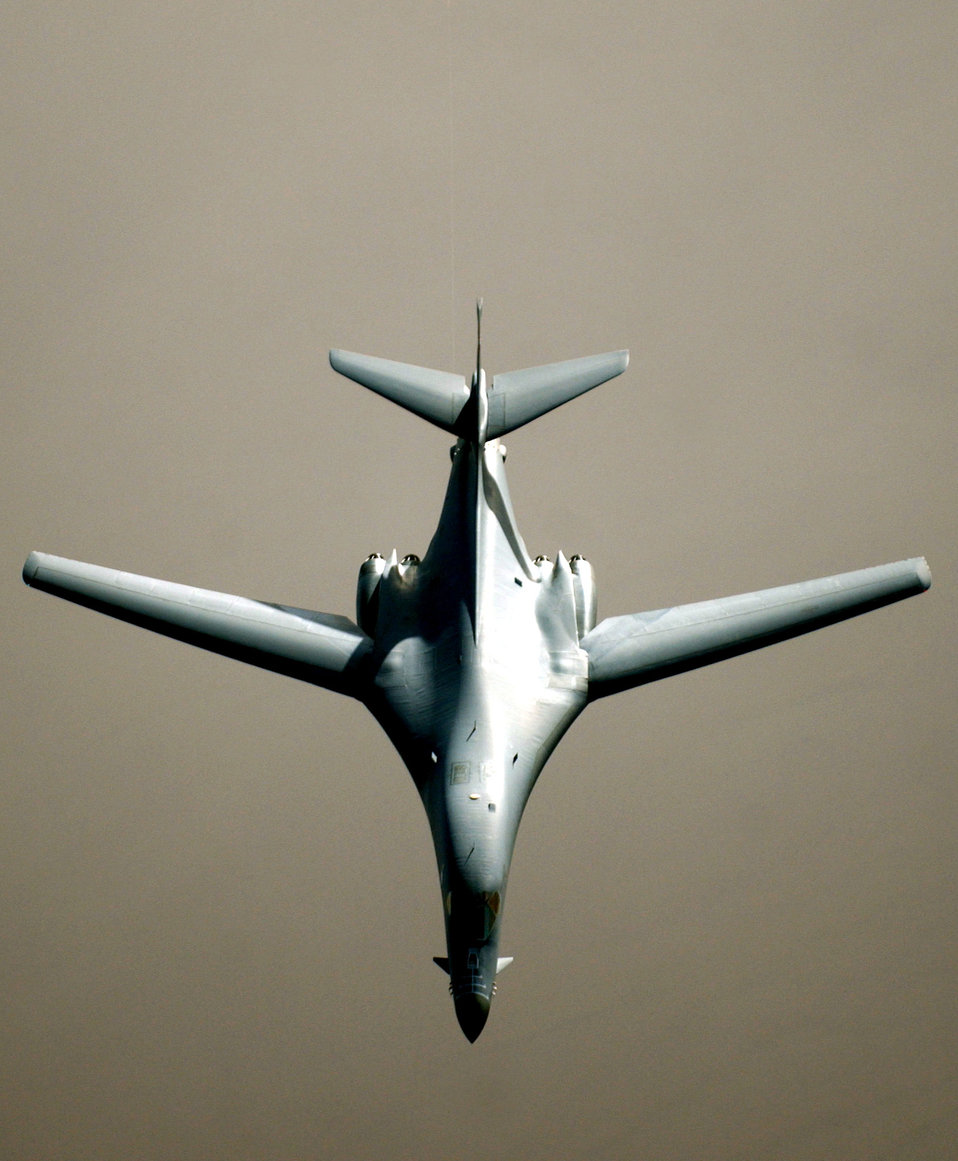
Lancer near Iraq

OPERATION IRAQI FREEDOM -- A B-1 Lancer continues its mission after refueling in the skies near Iraq March 25. The B-1 crew, assigned to 405 Air Expeditionary Wing, is flying missions from a forward-deployed air base supporting Operation Iraqi Freedom.